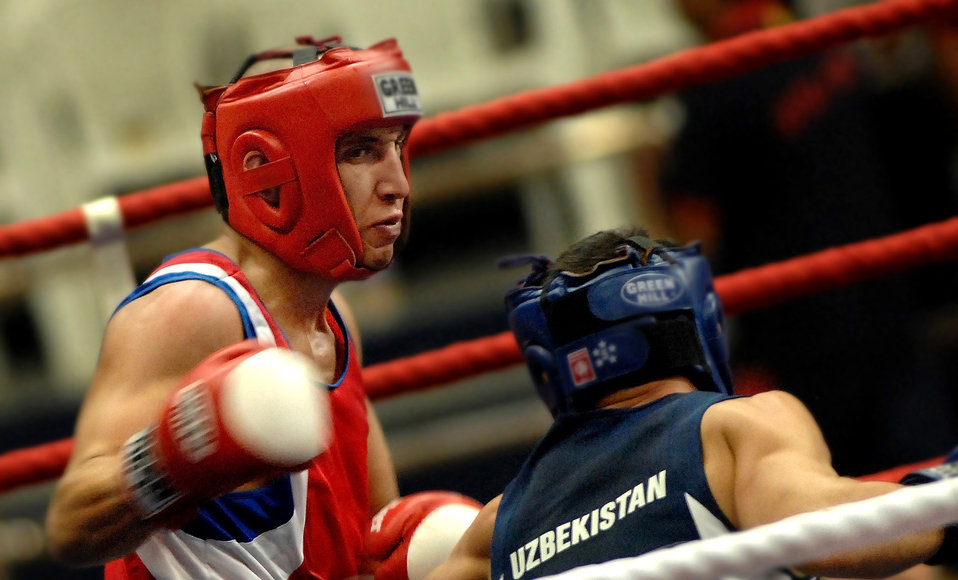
Americans compete in Military World Games

Army Capt. Boyd Melson (left) throws a right hook against Pvt. Hudaynazarov Rawshan of Uzbekistan during the Military World Games Boxing competition Oct. 15 in Hyderabad, India. The Conseil Internationale du Sport Militaire's Military World Games event is the largest international military Olympic-style event in the world. In this year's fourth edition of the Games, 103 countries and more than 5,000 athletes are scheduled to compete Oct. 14 through 21 in boxing, diving, soccer, handball, judo, military pentathlon, parachuting, sailing, shooting, swimming, volleyball and track and field. The purpose of the Military World Games is to promote friendship through sport.